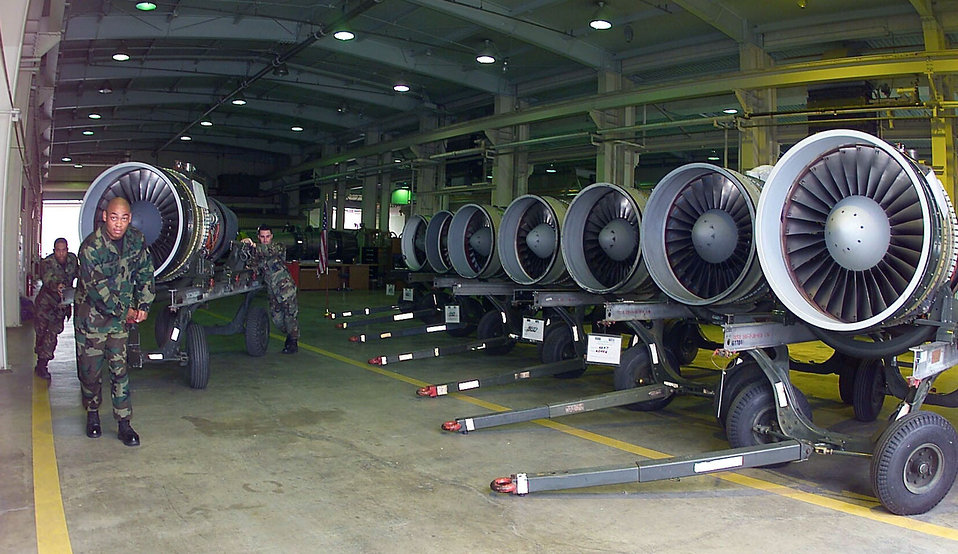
Spares to spare

OSAN AIR BASE, South Korea -- Airmen from the 51st Maintenance Squadron's propulsion flight here move the final A-10 Thunderbolt II engine into line. All 11 of the spare engines are mission-ready. The airmen are (left to right) Senior Airman Gueshuin Murray, Staff Sgt. Cedric Smith and Senior Airman John Bray.